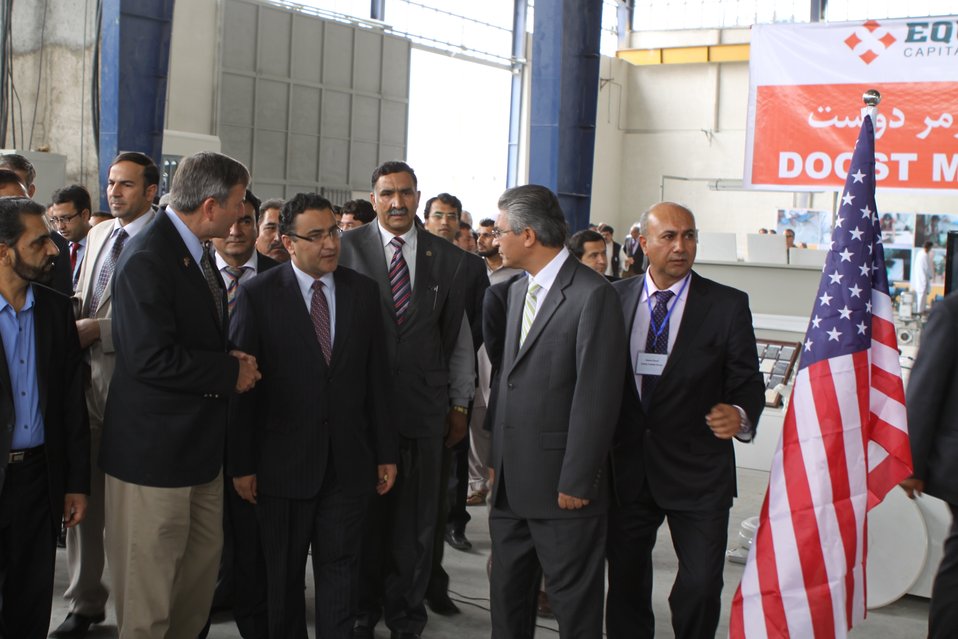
100525 Hirat Marble Conference 095